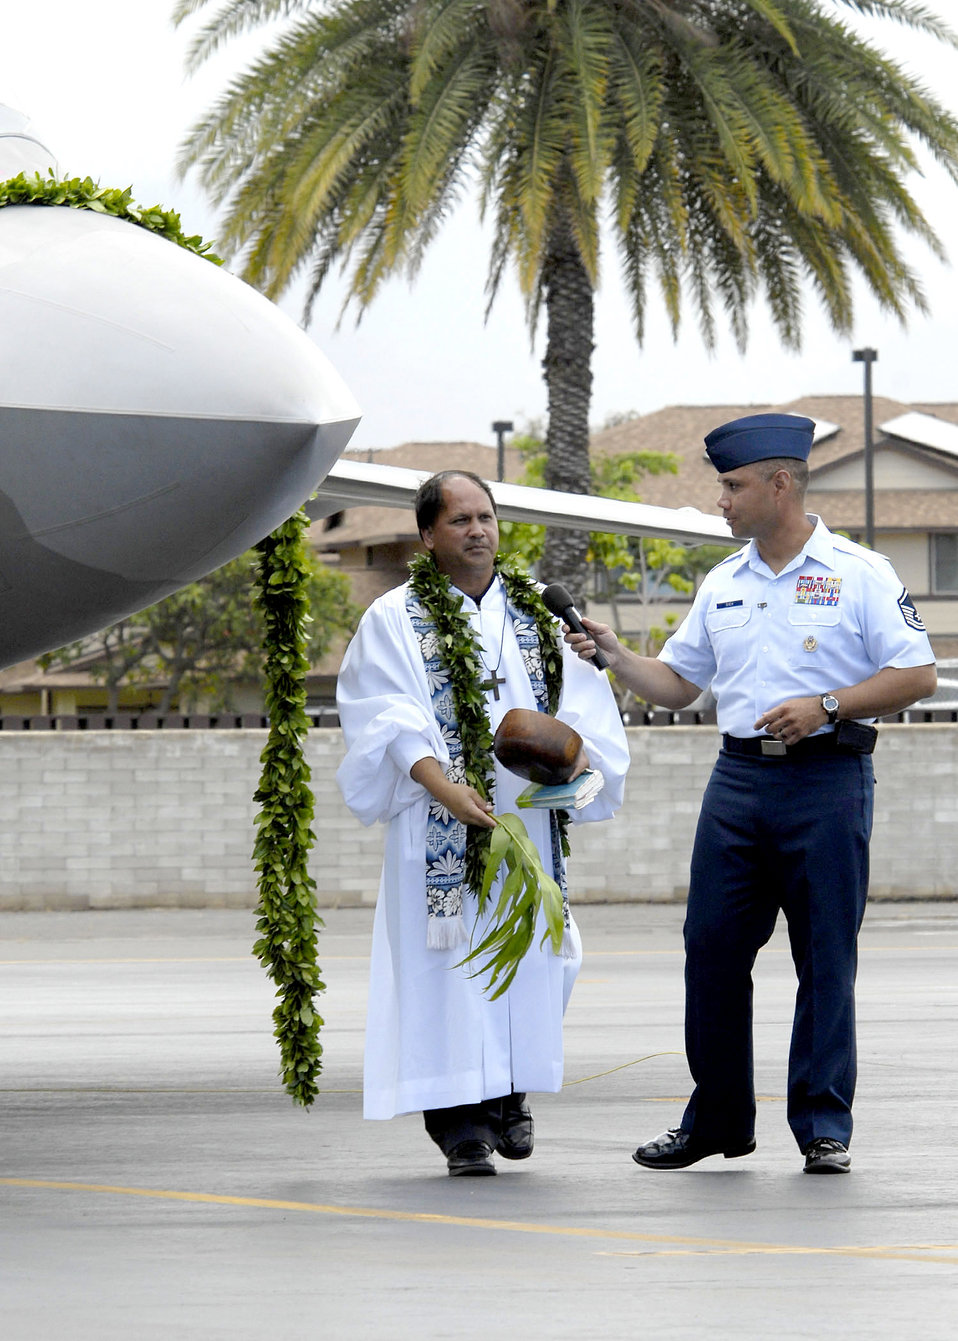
F-22 Raptors in Hawaii

Kahu Kordell Kekoa (left) blesses an F-22 Raptor with Ti leaves and Hawaiian water during the arrival ceremony at Joint Base Pearl Harbor-Hickam, Hawaii, July 9, 2010. The arrival of the F-22 marks the beginning of a new associate unit between the Hawaii Air National Guard and the active duty Air Force.